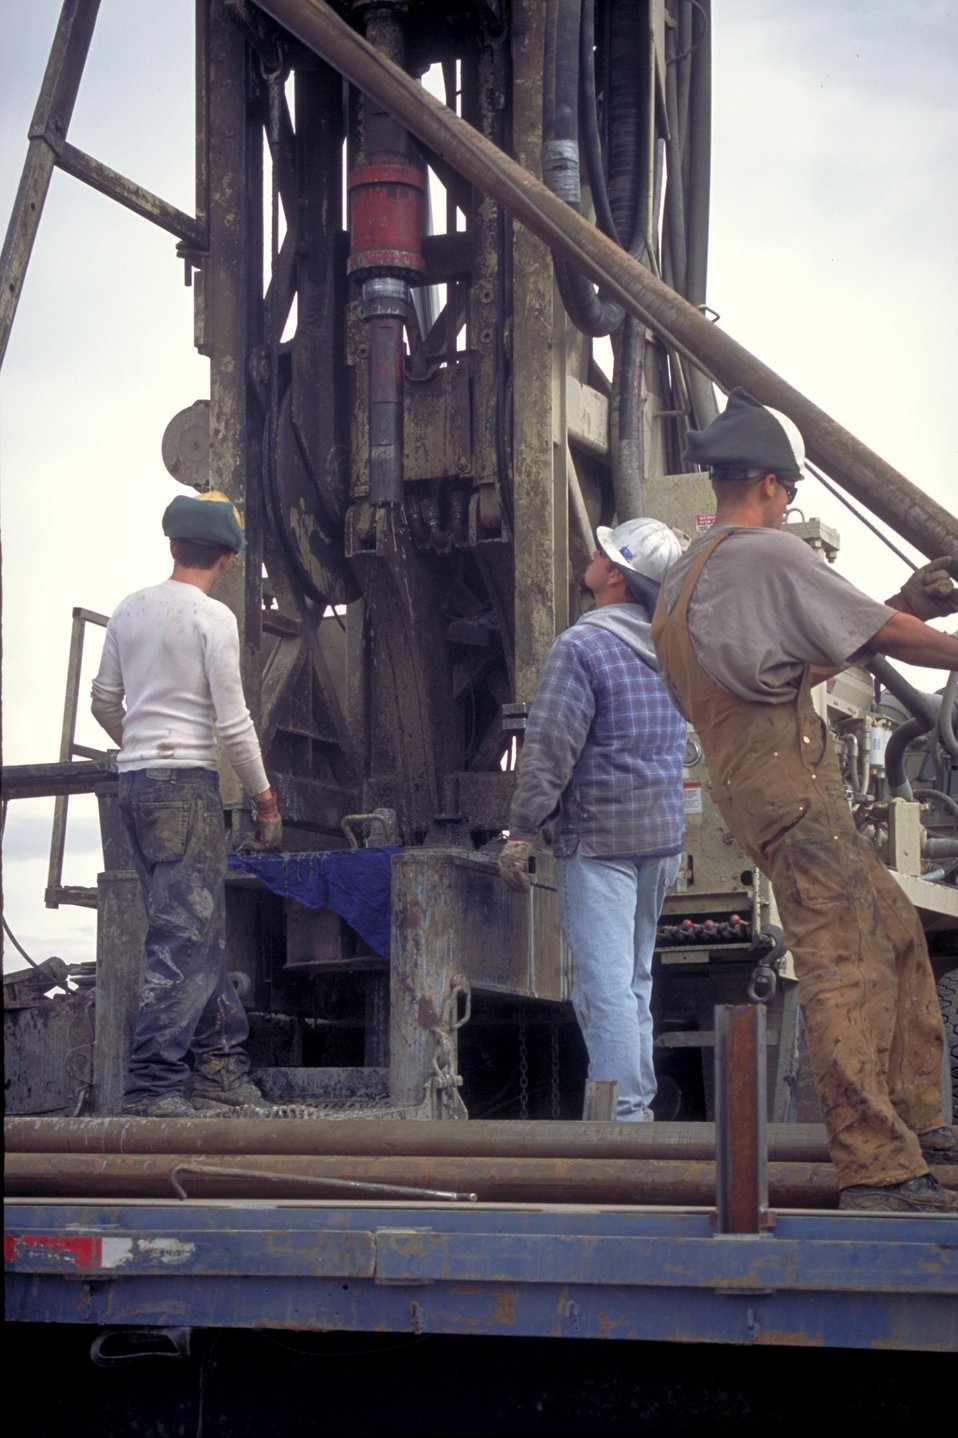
Drilling for coal bed methane near Price, Utah.